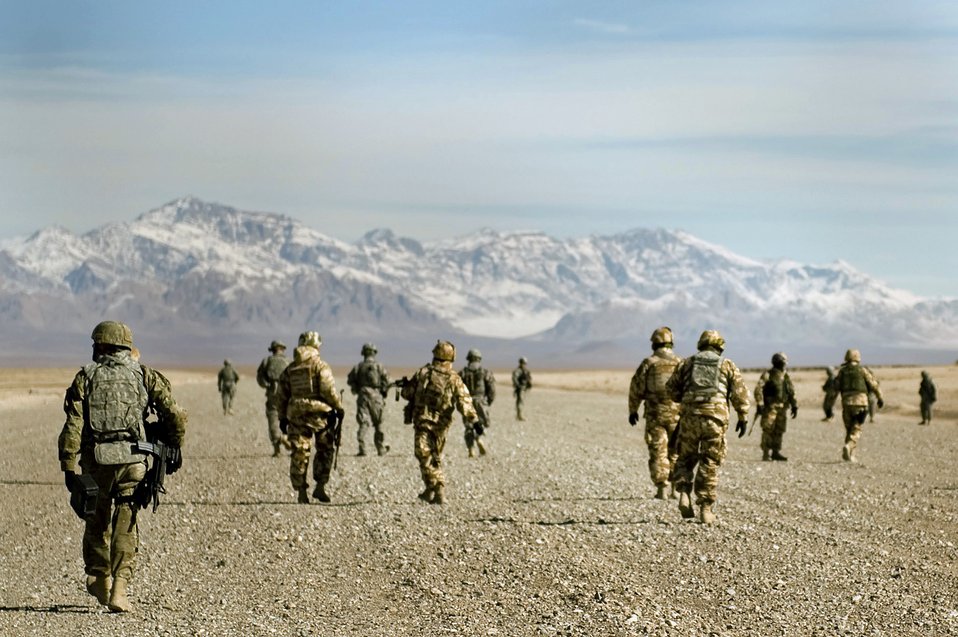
Inspection in the desert

Members of the Air Force, Army and Romanian army conduct a foreign-object debris walk and inspection of a dirt landing strip Feb. 17, 2011, in Zabul province, Afghanistan, as part of a landing-zone safety-officer class taught by Air Force instructors.